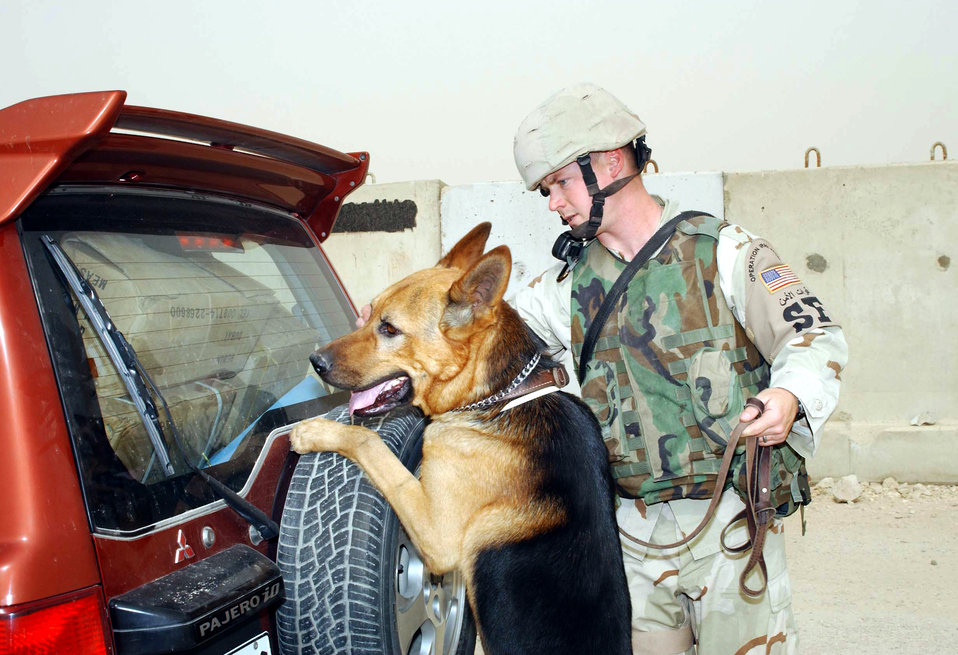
Military working dogs: More than man's best friend

SOUTHERN IRAQ -- Doran, a 4-year-old explosive patrol dog, searches the back of a civilian vehicle at a remote location as his handler, Staff Sgt. Gregory Long, directs him to potential hiding spots. They are assigned to the 407th Expeditionary Security Forces Squadron at Ali Base.